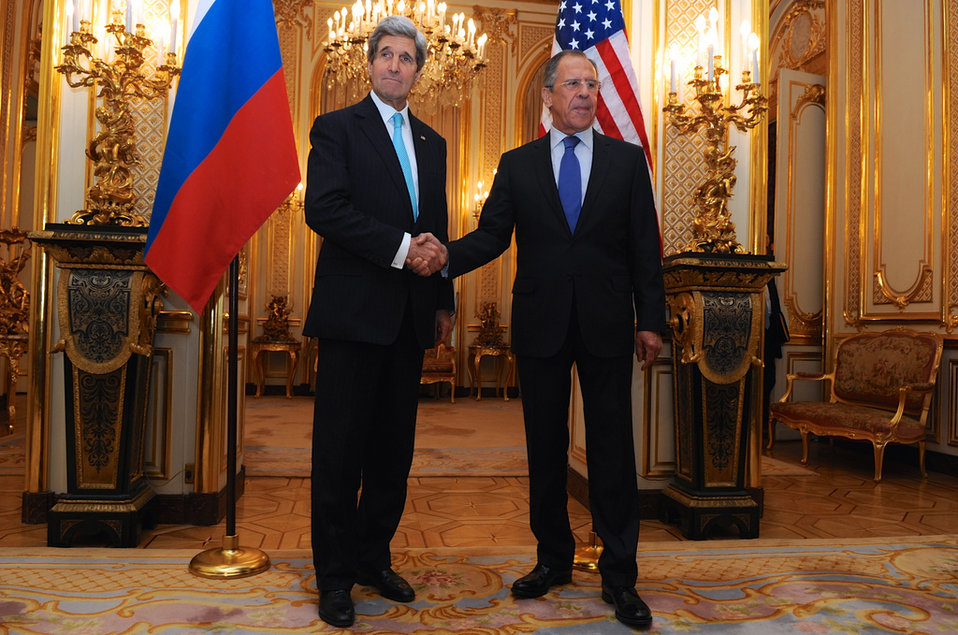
Secretary Kerry, Russian Foreign Minister Lavrov Shake Hands Before Ukraine Meeting in Paris

U.S. Secretary of State John Kerry and Russian Foreign Minister Sergey Lavrov shake hands in Paris, France, on March 30, 2014, before a meeting focused on Ukraine.